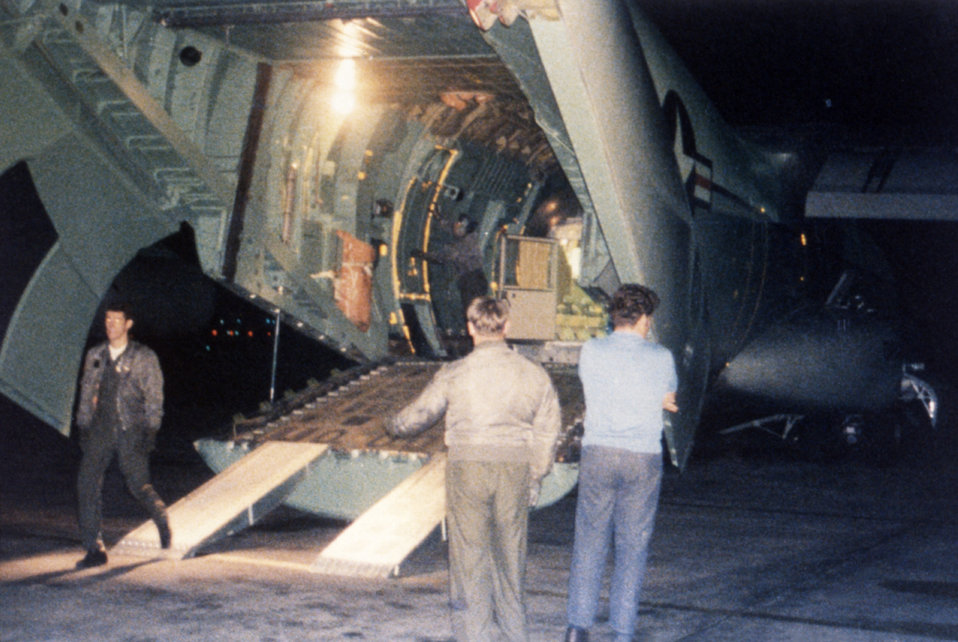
This 1976 photograph was taken in Pretoria, South Africa during the medical evacuation of Del Conn, a Peace Corps volunteer who was suspected of acquiring the Ebola virus.